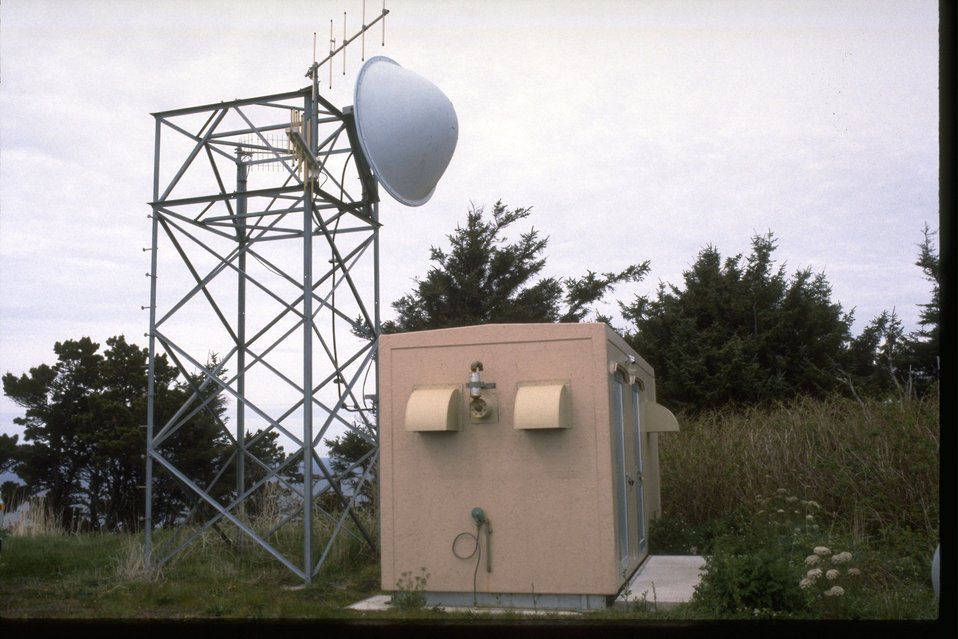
Communications site on Communication Hill.